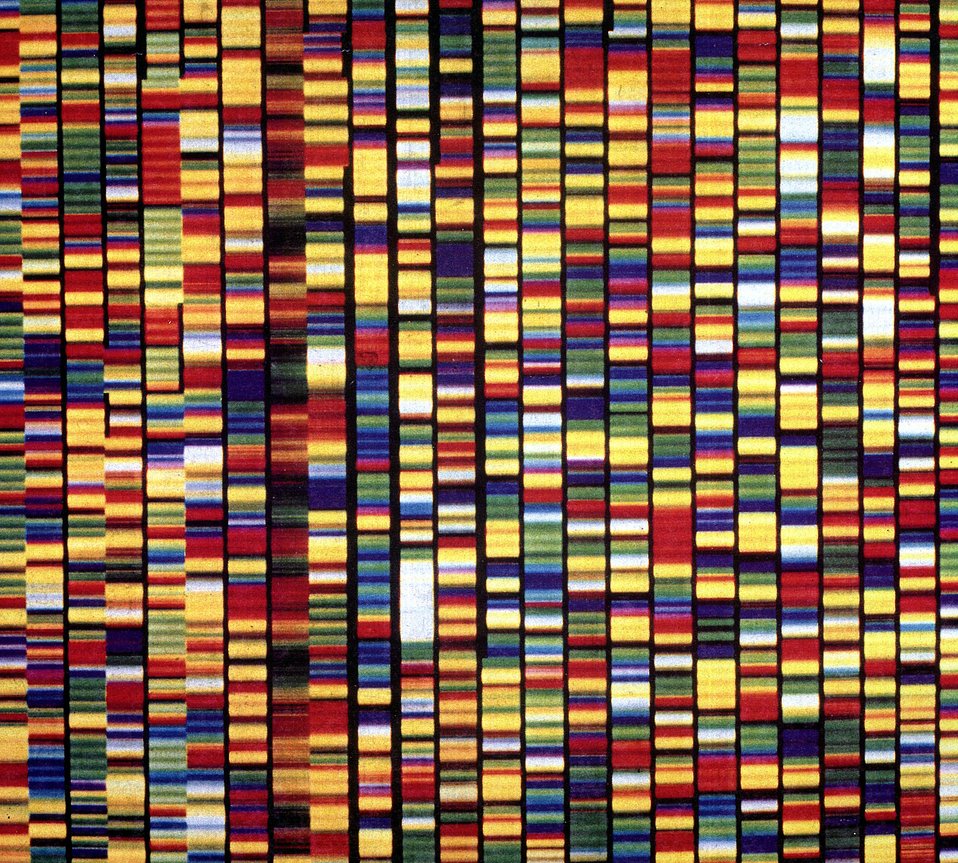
This is an image from an Applied Biosystems Model 373A DNA Sequencer after digital processing and enhancement. Each of the 24 vertical lanes represents a different DNA sample.